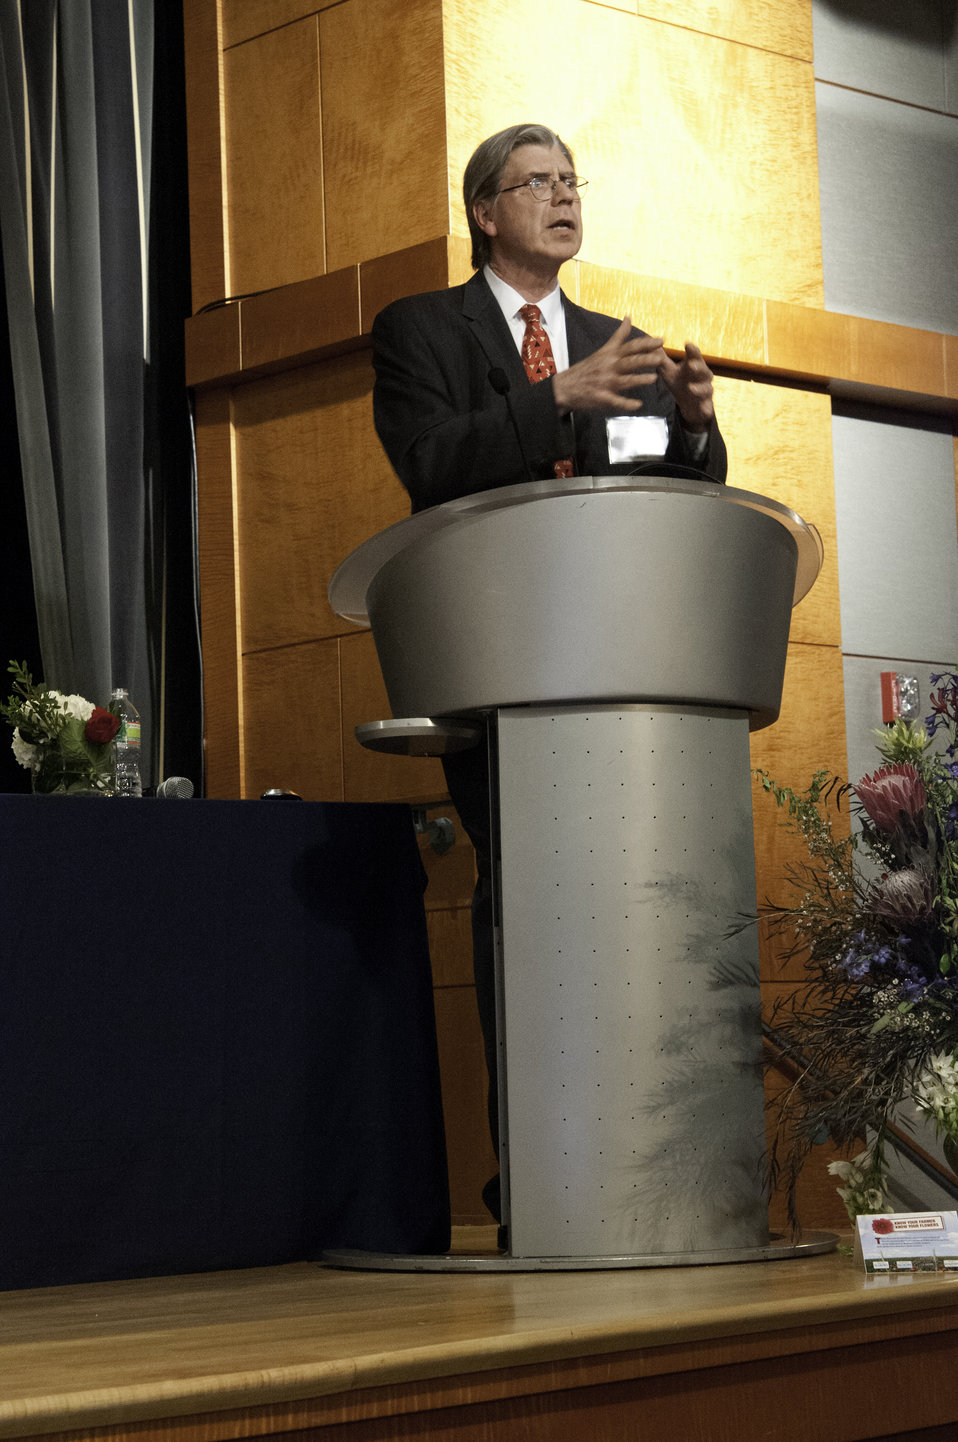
Agriculture Chief Economist Dr. Joseph Glauber speaks at the G-8 International Conference on Open Data for Agriculture in Washington, D.C. on Apr. 29, 2013. Glauber spoke at the breakout session on “How Recent G-8/G-20 Research Initiatives can Contribute to the Open Data for Agriculture System”.